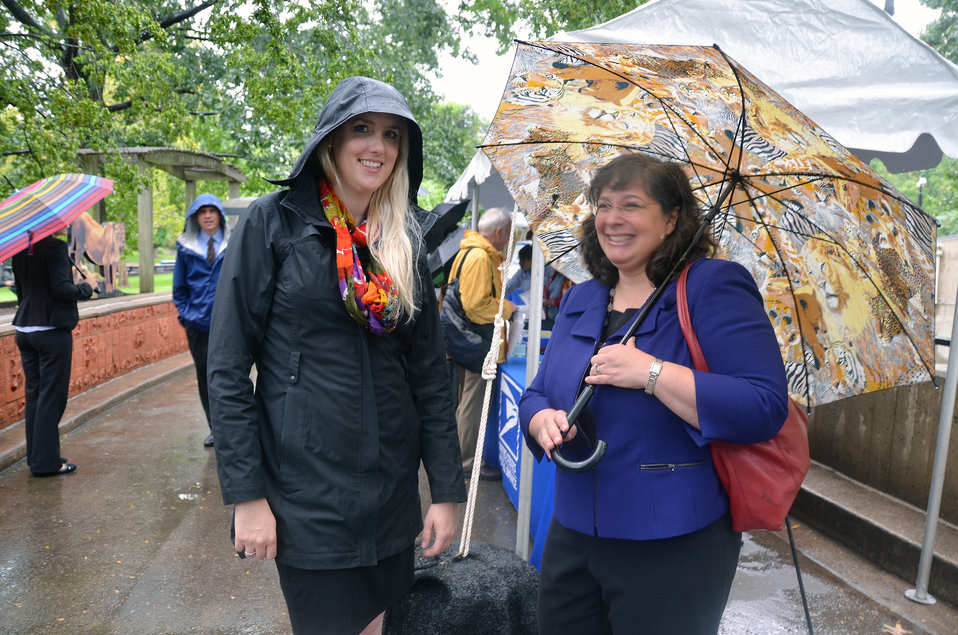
Save Vanishing Species Stamp First Day of Issue